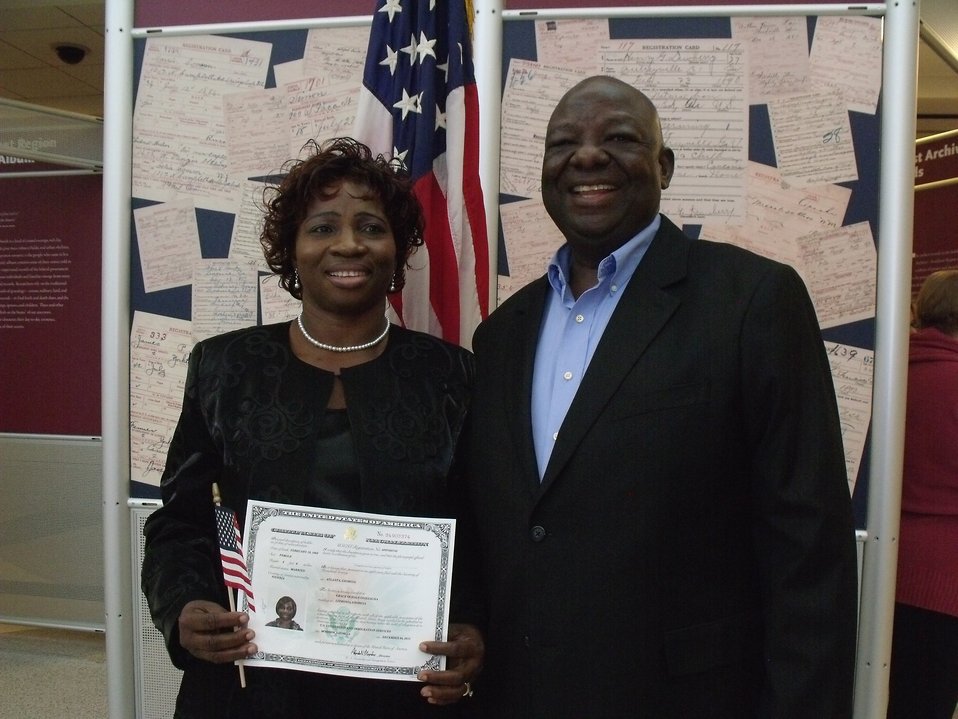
New Citizens